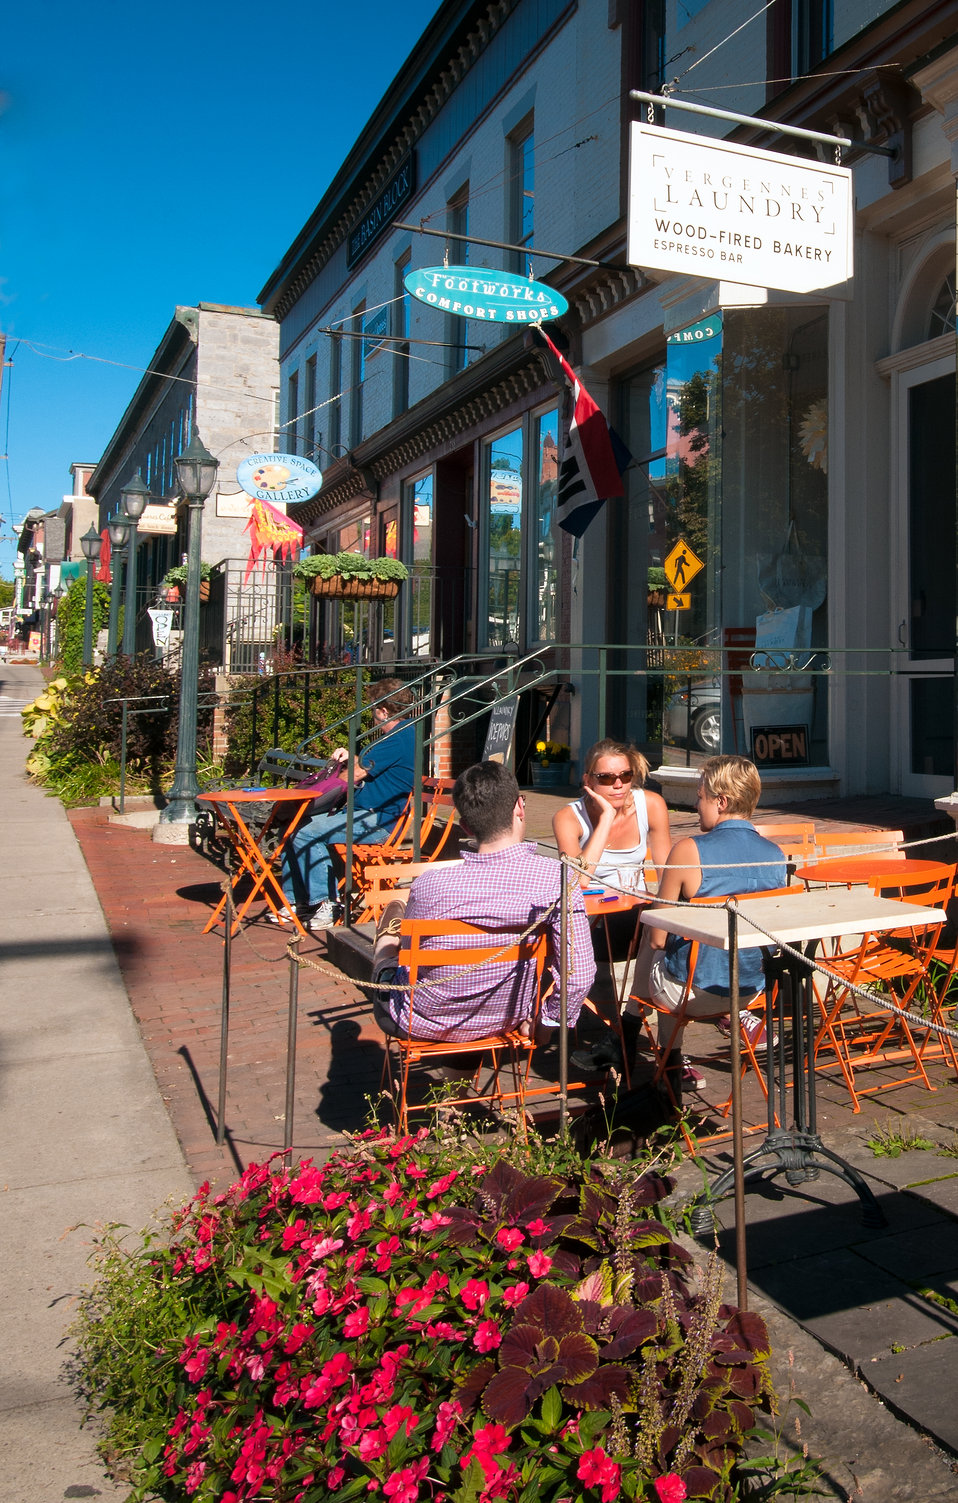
The U.S. Department of Agriculture (USDA) Rural Development (RD) offers with loans and grants to improve the economy of rural America such as Vergennes, VT on Sept 18, 2013.